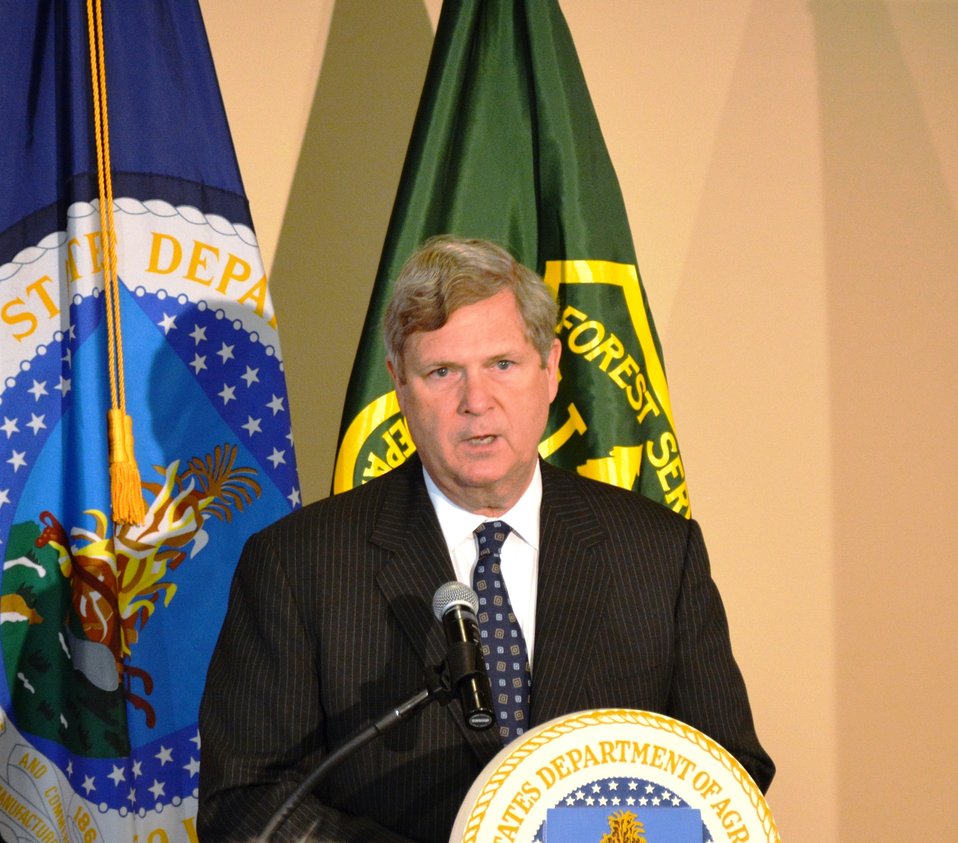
Agriculture Secretary Tom Vilsack addresses guests and press at the History of Colorado Center to announce action to combat insects and diseases that weaken forests and increase fire risk in Denver, CO on May 20, 2014.